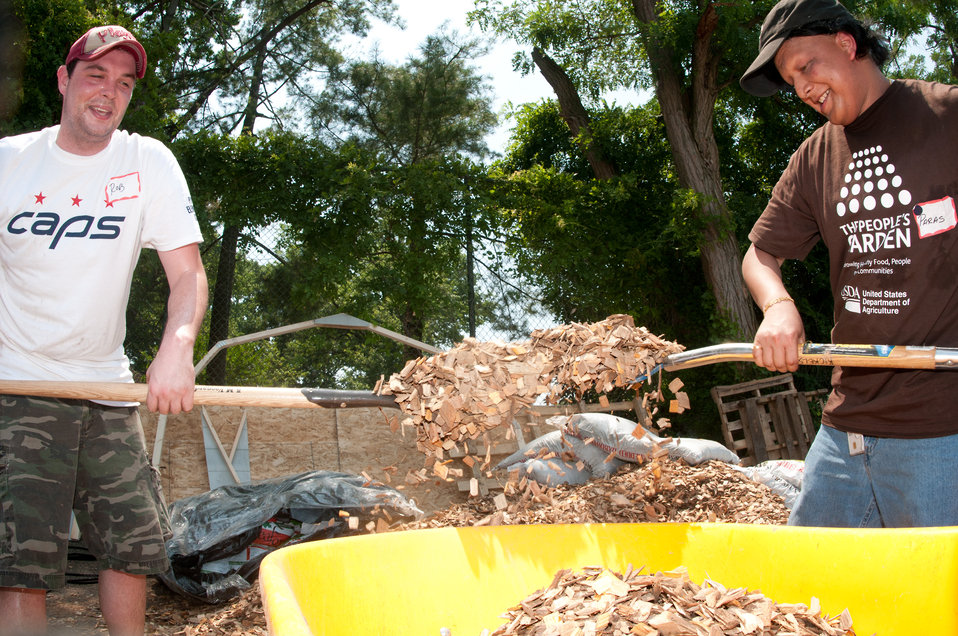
U.S. Department of Agriculture’s Paras Kinariwala (right) and Caps volunteer Rob loading woodchips into a wheel barrel for the People’s Garden, at William B. Powell Elementary School on Thursday, June 9, 2011 in Washington, DC. Volunteers from U.S. Department of Agriculture People’s Garden Executive Master Gardener program and Washington Capitals hockey organization, along with defenseman Jeff Schultz, and mascot Slapshot transformed a grassy corner of the school playground into a habitat garden and outdoor learning area. The Washington Capitals donated new tools; tool shed; garden materials; lunch; most of the volunteers and more. The completed projects included a walking path; tiling of garden plots; planting a bird habitat garden, pollinator garden and native grasses; caterpillar and butterfly plaques; hummingbird and bat house, and tool shed. The garden will later include a picnic area, outdoor classroom, hummingbird garden, Monarch Butterfly watch garden, native bee garden, and birdbath. USDA challenges its employees to establish People's Gardens at USDA facilities worldwide or on this case, help communities create gardens. People's Gardens vary in size and type, but all have a common purpose - to help the community and the environment.